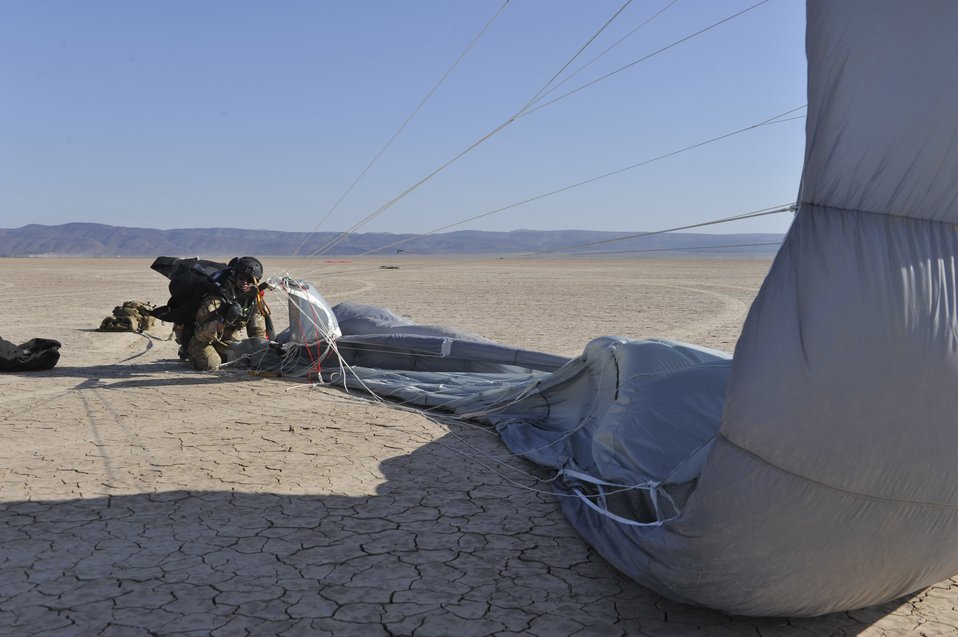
Heroes in training

First Lt. Eric Hansen, an 82nd Expeditionary Rescue Squadron combat rescue officer, detaches his parachute assembly after successfully jumping out of a U.S. Marine Corps KC-130J for a training mission in the Grand Bara Desert, Djibouti, Oct. 21, 2011. The training mission required the pararescue team to safely parachute into the simulated crash site, locate and treat casualties, and coordinate evacuation for the casualties while maintaining security.